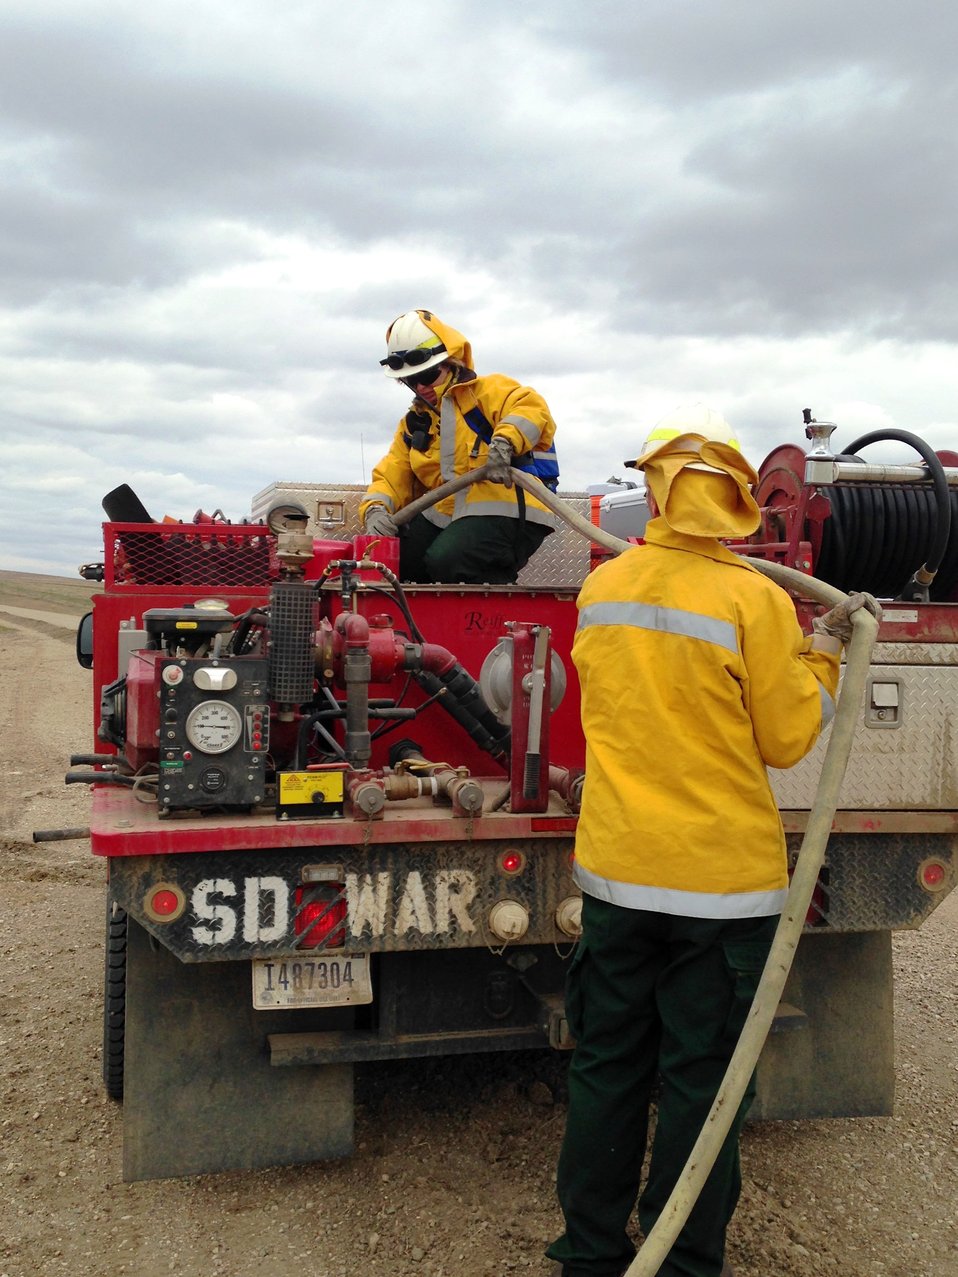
Refilling Water Tanks

Here, two firefighters refill a Type 6 Fire Engine from a pump placed in a wetland near the burn area. This engine patrolled fire lines on a prescribed fire on the Rau Waterfowl Production Area in the Sand Lake Wetland Management District of South Dakota.